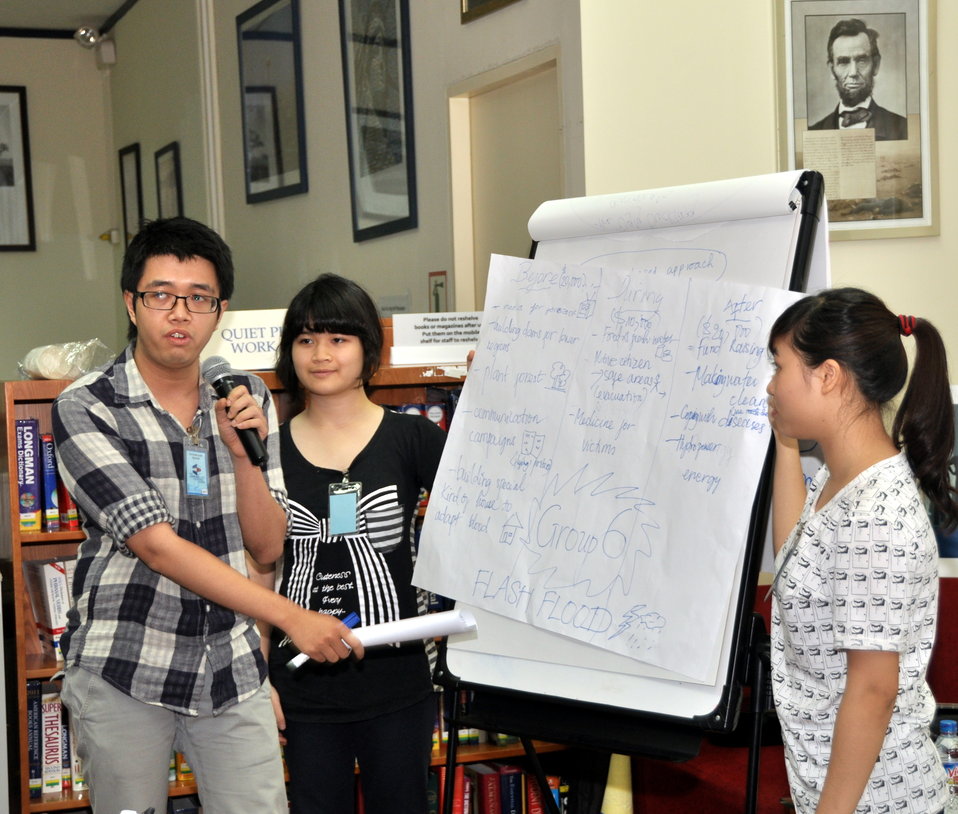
Climate Change Talk at the American Center

Hanoi, May 28, 2013.